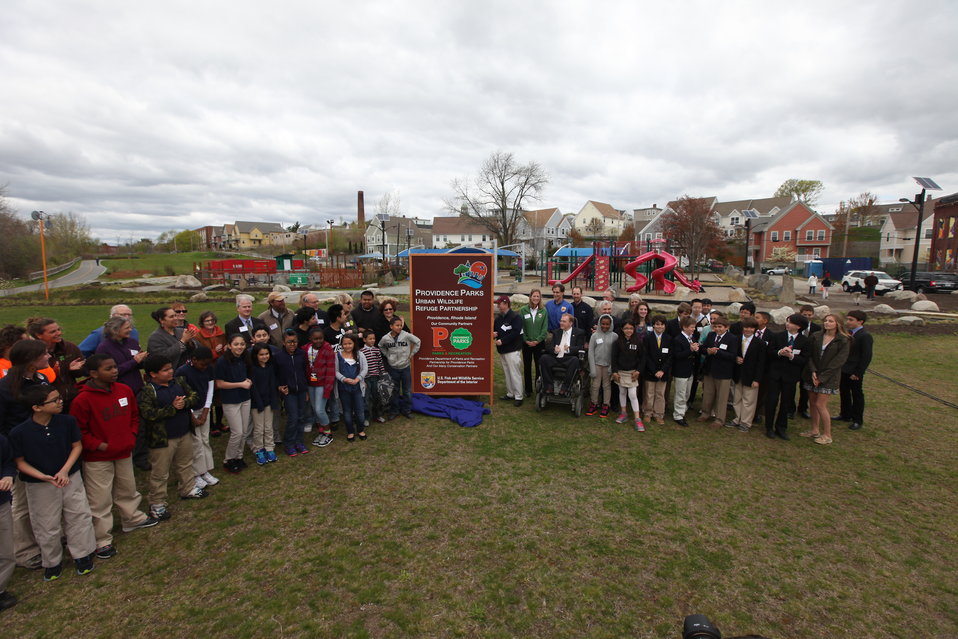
Providence Parks Urban Wildlife Refuge Partnership sign unveiling

Area school children and project partners participated in the sign unveiling.